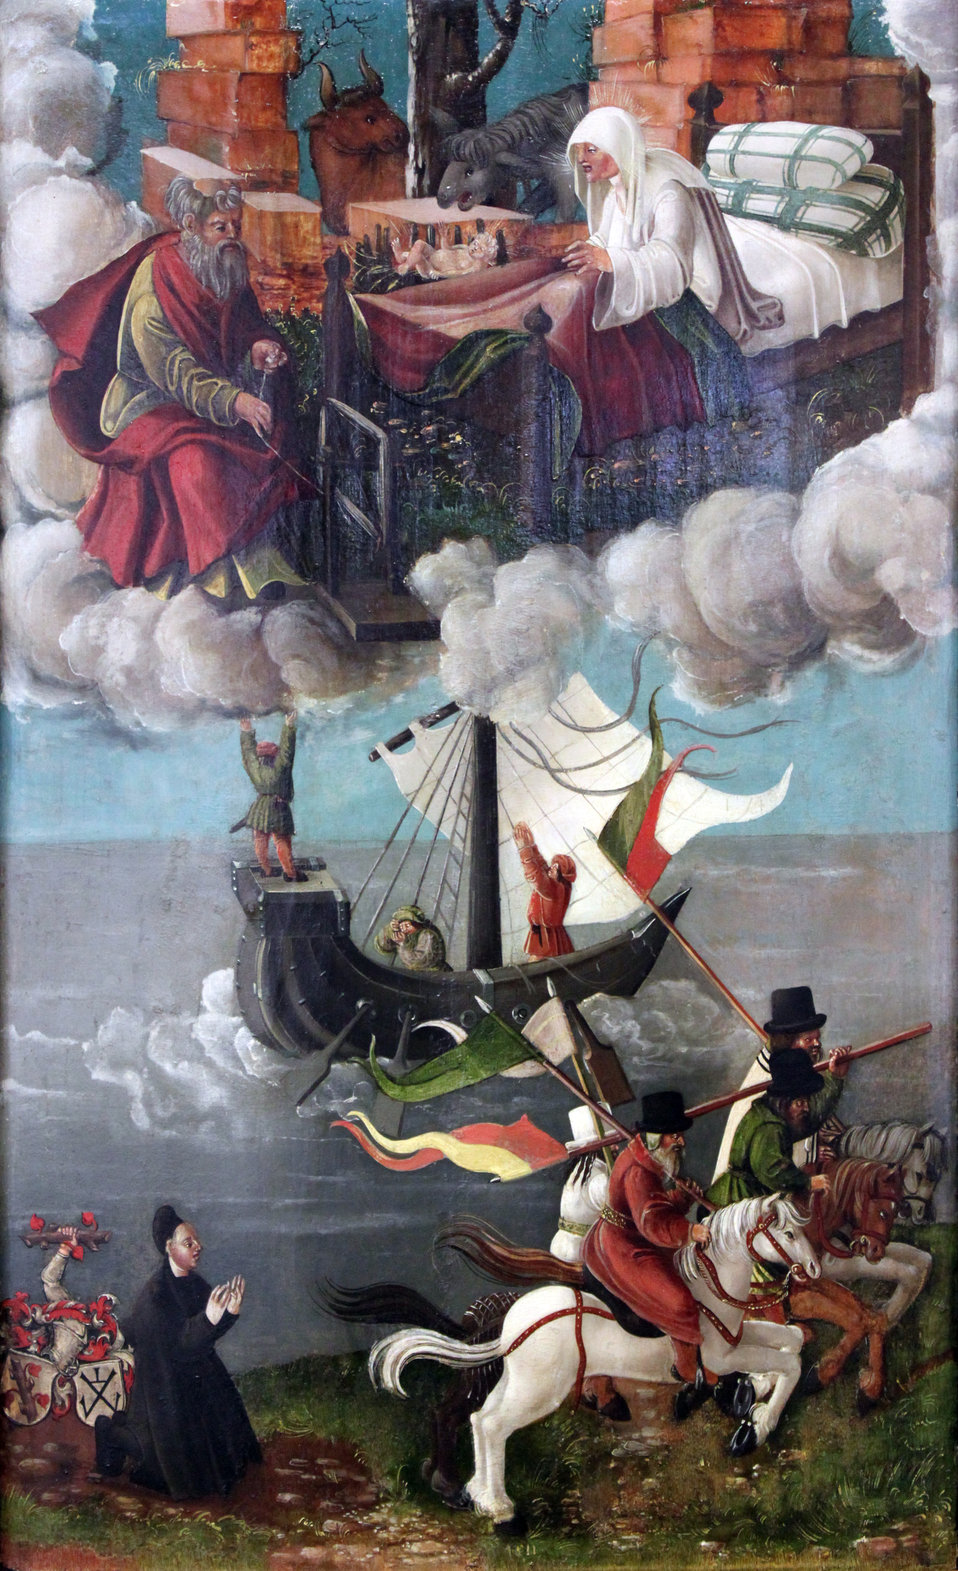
1511 Lautensack Votivbild des Stephan I. Praun anagoria